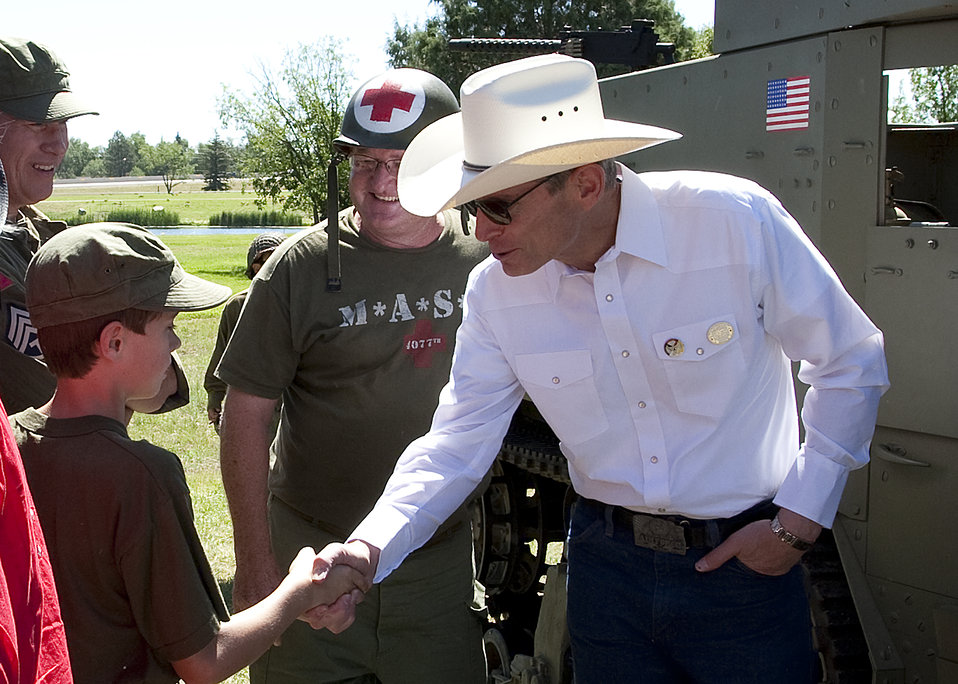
Air Force chief of staff visits Cheyenne

Air Force Chief of Staff Gen. Norton Schwartz talks with Spencer Hicklin about his participation in a World War II reenactment during Fort D. A. Russell Days July 23, 2011, held at F. E. Warren Air Force Base, Wyo.